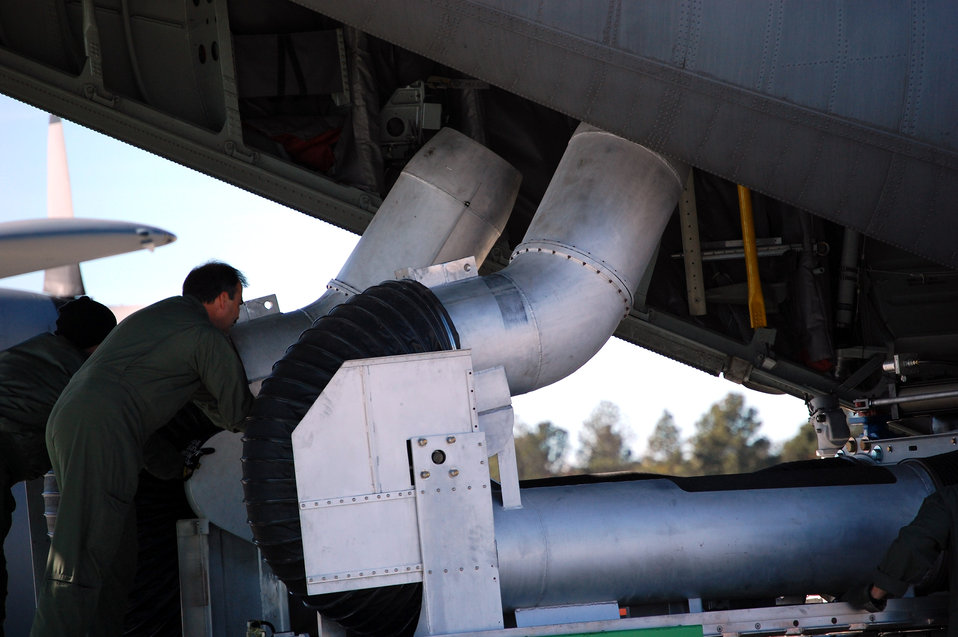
Herculean support for California fires

Wyoming Air National Guard Airmen give a final push to load the Modular Airborne Fire Fighting System onto a Wyoming Air National Guard C-130 Hercules Oct. 23 in Cheyenne, Wyo. The C-130 is being deployed to California to assist with firefighting efforts. Fires have ravaged Southern California forcing more than 500,000 people from their homes as the president has declared a federal emergency for seven counties in the state. The orange number on the tail identifies the plane as one of the units using the Modular Airborne Fire Fighting System to battle the blaze.